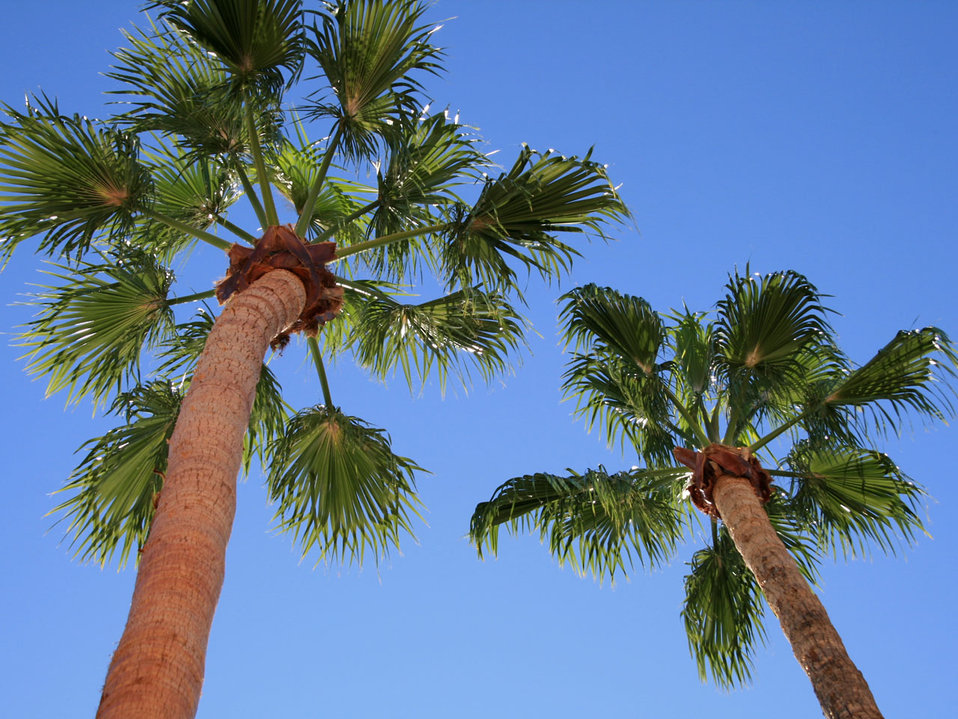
Tall fan palms

Ground-up view of two tall fan palms in tucson, arizona.